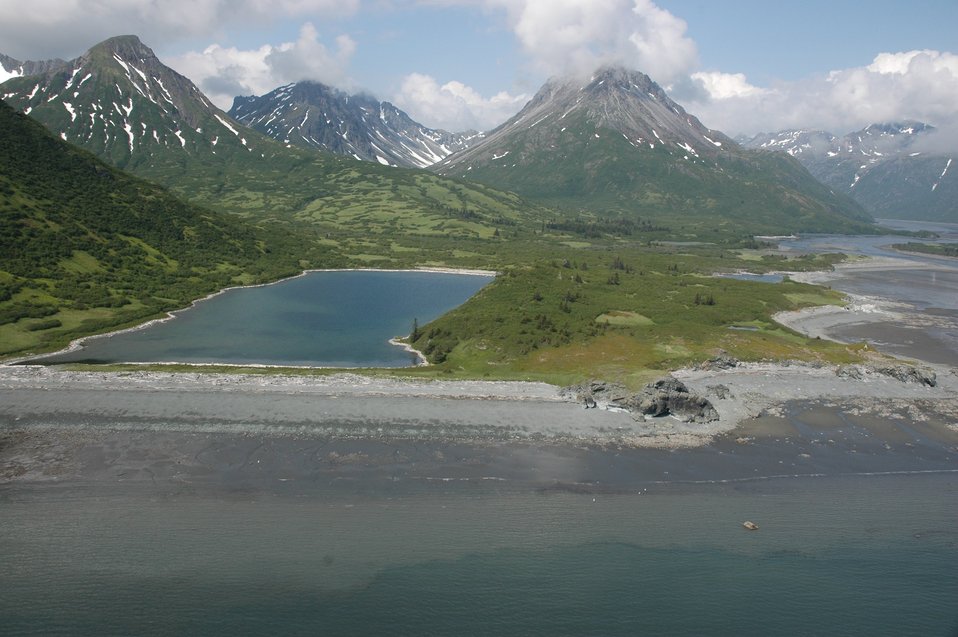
Aerial photograph. A rectangular lake, majestic mountains, the low tide line approximately 20 feet vertically below the logs and debris marking high tide.